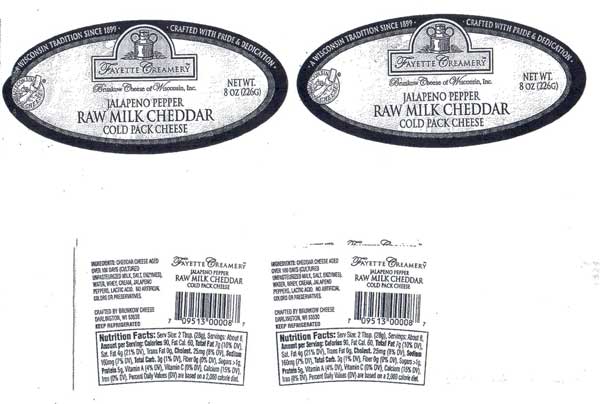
RECALLED – Cheese spread

May 23, 2014 – Brunkow Cheese Issues Allergy Alert On Undeclared Soy In Jalapeno Pepper Raw Milk Cheddar Cold Pack Cheese.